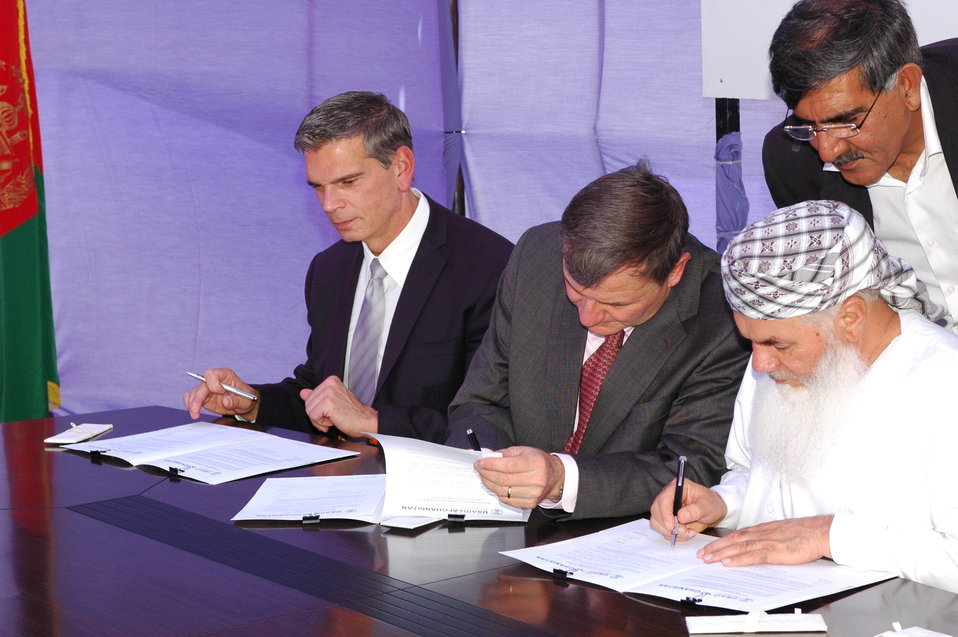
105 MW Tarakhil Power Plant Handover